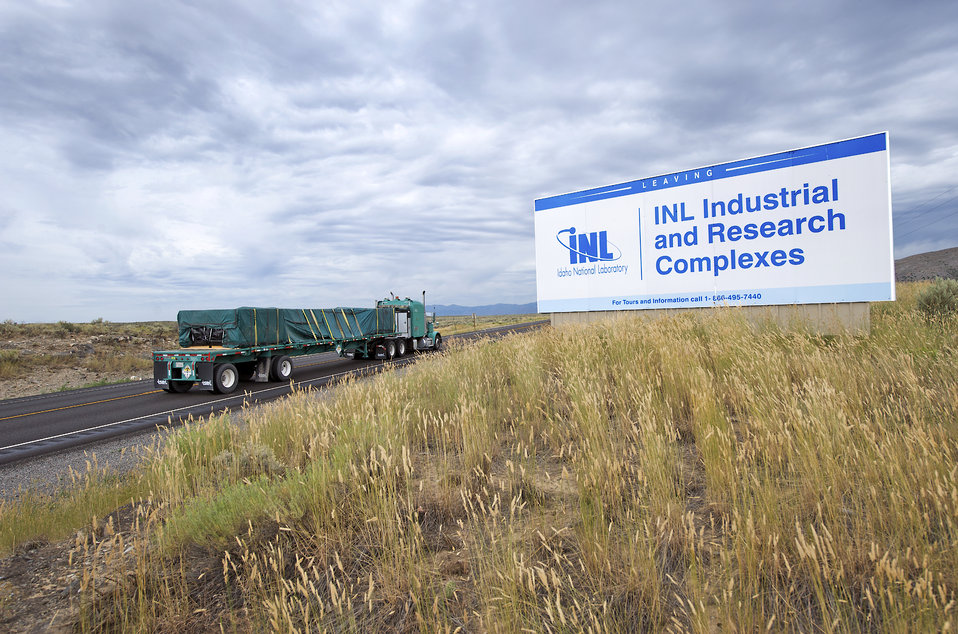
Idaho’s Advanced Mixed Waste Treatment Project Workers Complete Recovery Act Project

A shipment of transuranic radioactive waste leaves
DOE’s Idaho site en route to the Waste Isolation Pilot
Plant for permanent disposal.

In the expedited waste removal funded by more than $22 million from the Recovery Act, the workers safely retrieved, treated, and shipped close to 4,800 cubic meters of radioactive waste — which would fill two Olympic swimming pools — from the Cold War legacy to permanent disposal facilities.